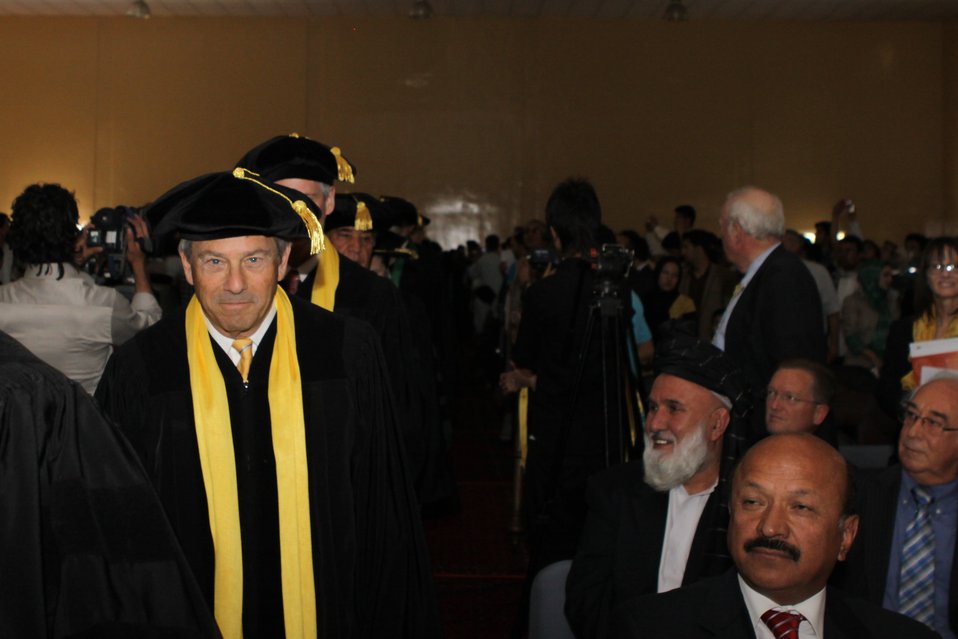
100526 AUAF Graduation 113